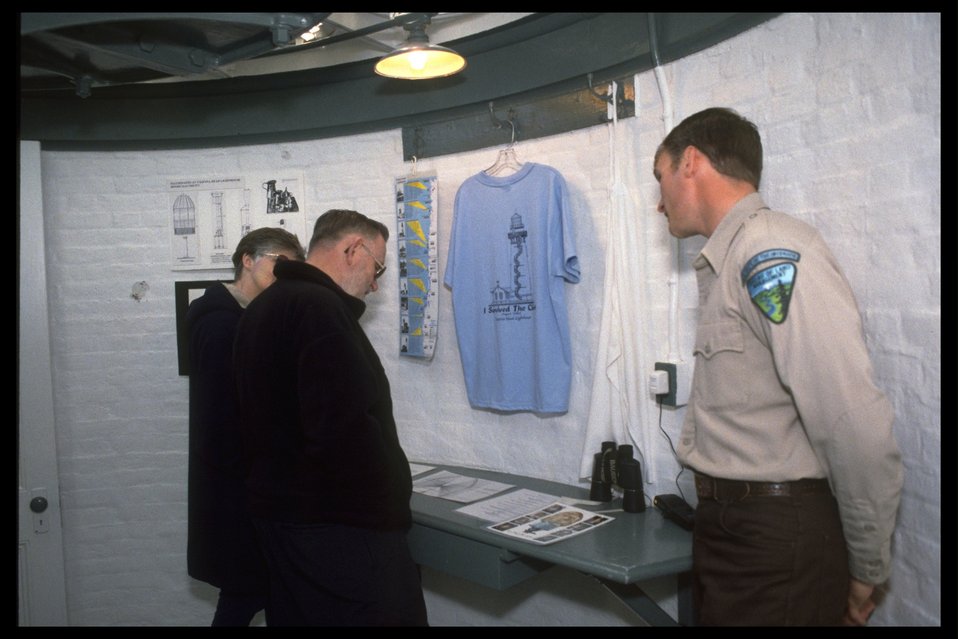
Inside of Yaquina Head Lighthouse.